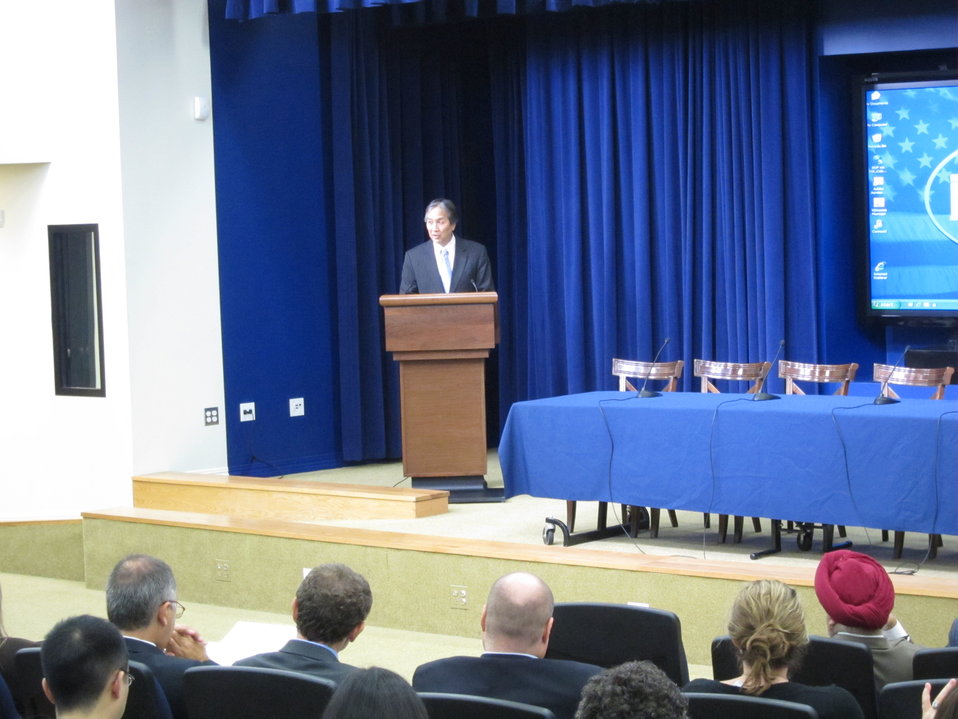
WH 2012 World Hepatitis Day Event